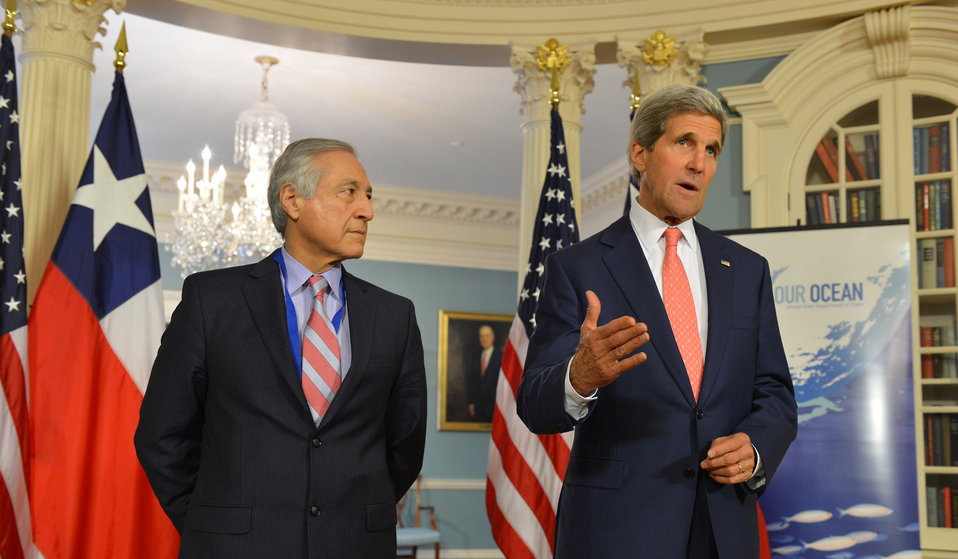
Secretary Kerry Delivers Remarks With Chilean Foreign Minister Heraldo Munoz

U.S. Secretary of State John Kerry delivers remarks with Chilean Foreign Minister Heraldo Munoz at the U.S. Department of State in Washington, D.C. on June 16, 2014.